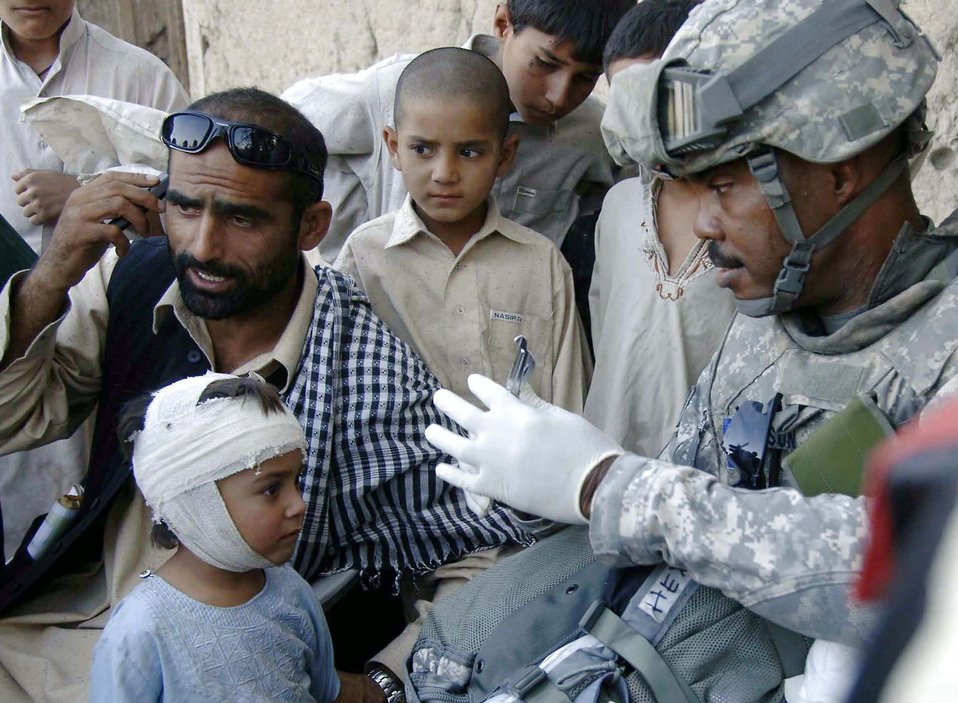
It's all better now

Tech. Sgt. William Allison puts away his scissors after bandaging an Afghan child during a foot patrol Nov. 8 in the Nangarhar Province of Afghanistan. He is part of the Nangarhar Provincial Reconstruction Team charged with assisting the provincial government in improving security, governance and reconstruction.